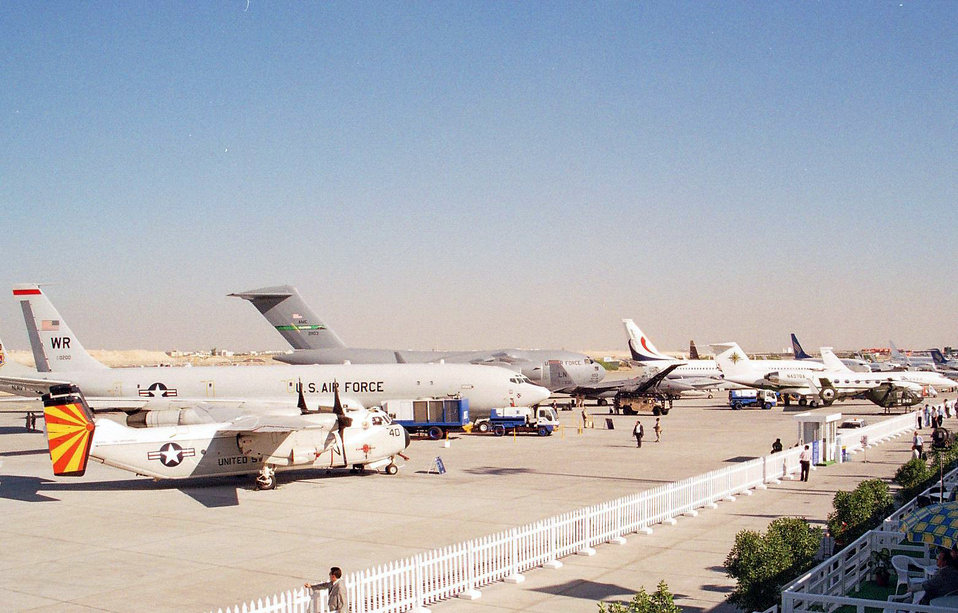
On display

DUBAI, United Arab Emirates -- About 18 Department of Defense aircraft, along with commercial aircraft, lined the flighltine for the Dubai Air Show here Dec. 7 to 11. The event is the premier air and space trade show in the Gulf region. Air Force aircraft brought in for the show included a C-17 Globemaster III, E-8C Joint Stars, A-10 Thunderbolt II and F-117 Nighthawk.